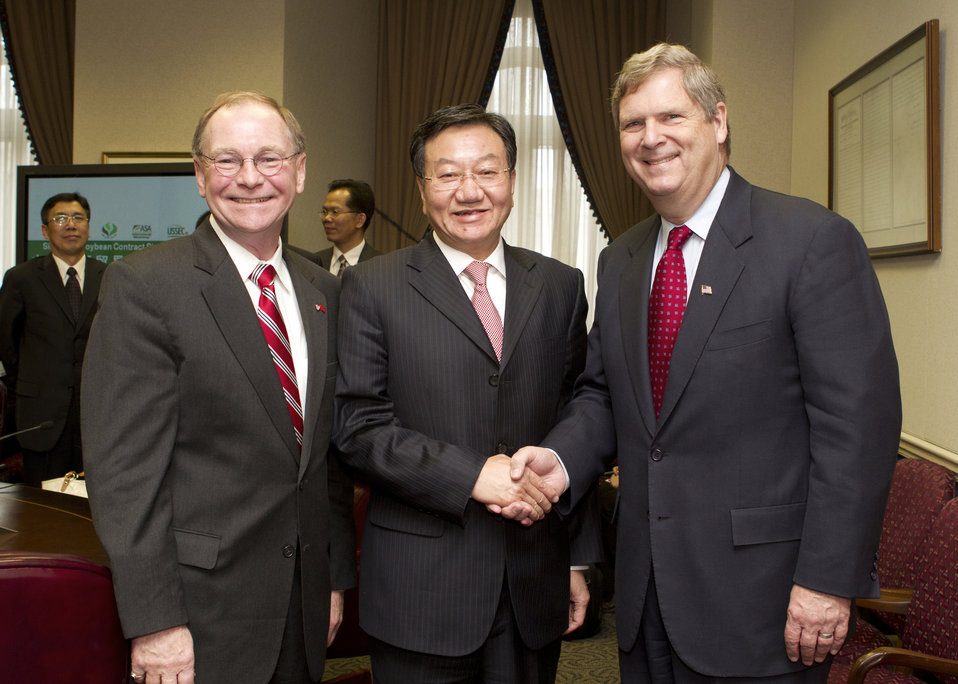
(L to R) Under Secretary for Farm and Foreign Agricultural Services Jim Miller, People’s Republic of China Vice Minister of Commerce Jaing Zengwei, and Agriculture Secretary Tom Vilsack meet before the signing agreement held at the U.S. Department of Agriculture in Washington, D.C., on November 22, 2010. The agreement is with a Chinese buying delegation and the U.S. soybean industry, indicating that the Chinese intend to purchase up to eight million metric tons of U.S. soybeans, valued at $3 billion. USDA photo 10di1559-753